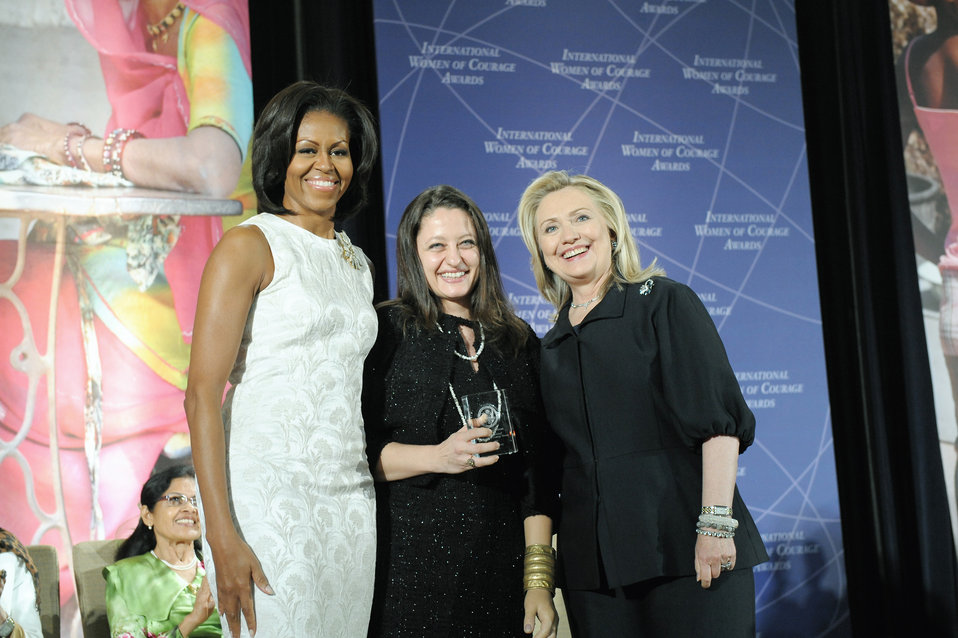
Secretary Clinton and First Lady Obama With 2012 IWOC Award Winner Safak Pavey of Turkey

U.S. Secretary of State Hillary Rodham Clinton, right; and First Lady Michelle Obama, left; pose for a photo with 2012 International Women of Courage (IWOC) Award Winner Safak Pavey of Turkey, at the U.S. Department of State in Washington, D.C., on March 8, 2012.